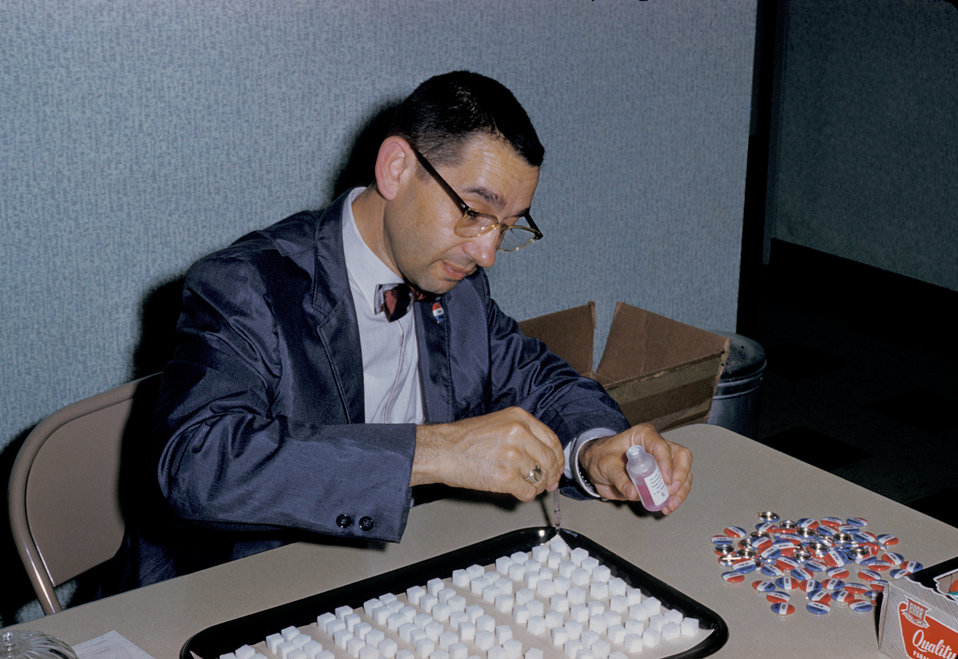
A healthcare worker is dropping oral poliovirus vaccine on sugar cubes prior to immunization administration.